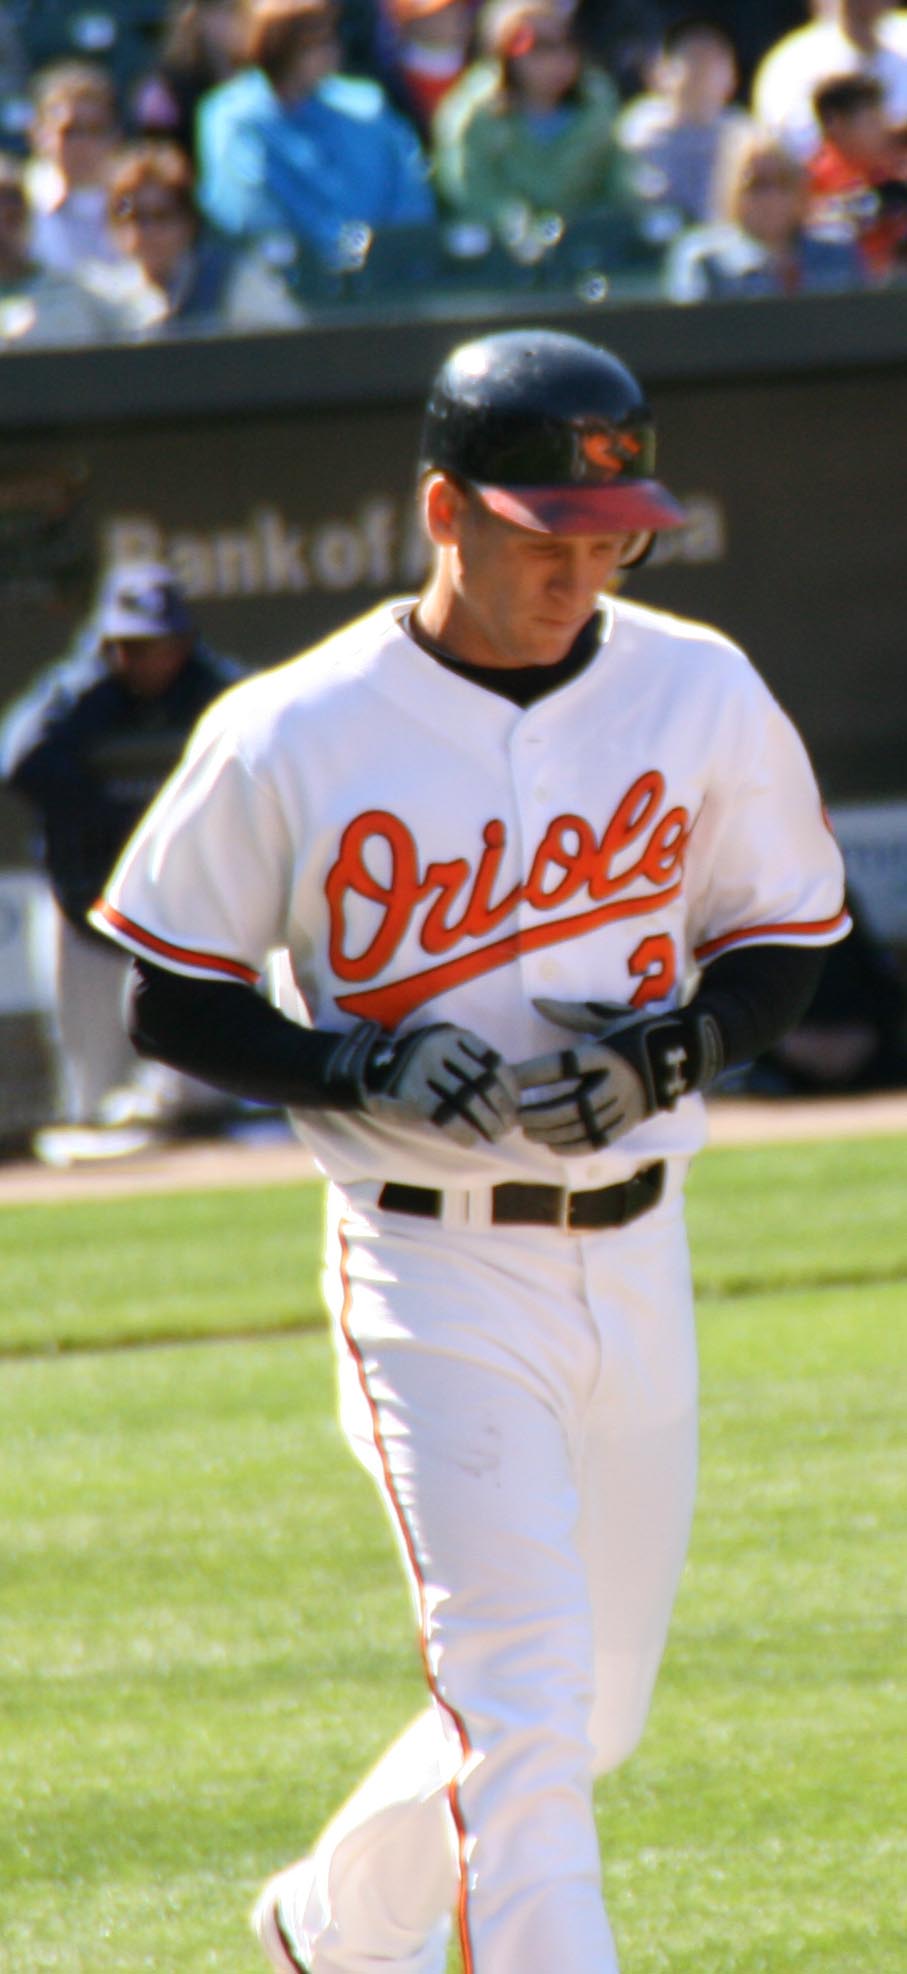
ryan freel as an oriole